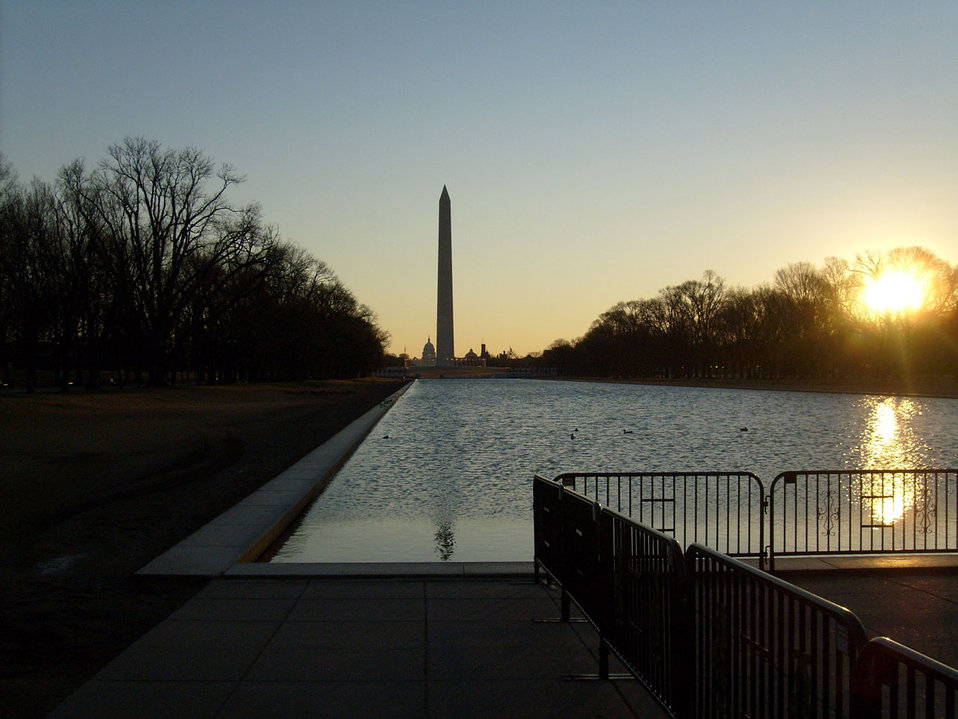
Dawn

Early morning in dc.